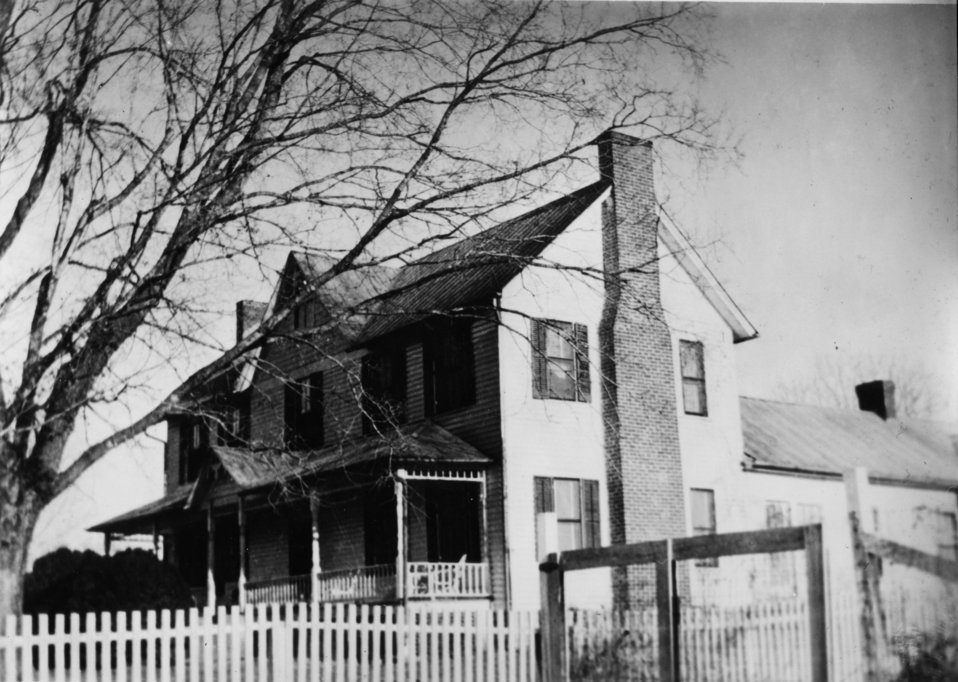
Early settlers at Oak Ridge